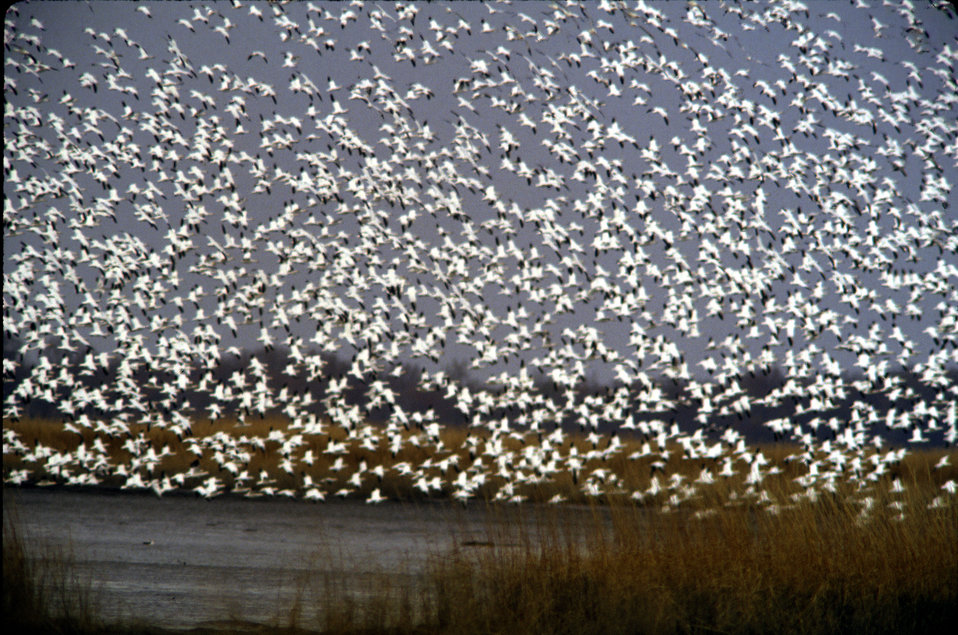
Snow Geese Take Off

Bombay Hook National Wildlife Refuge, DE.